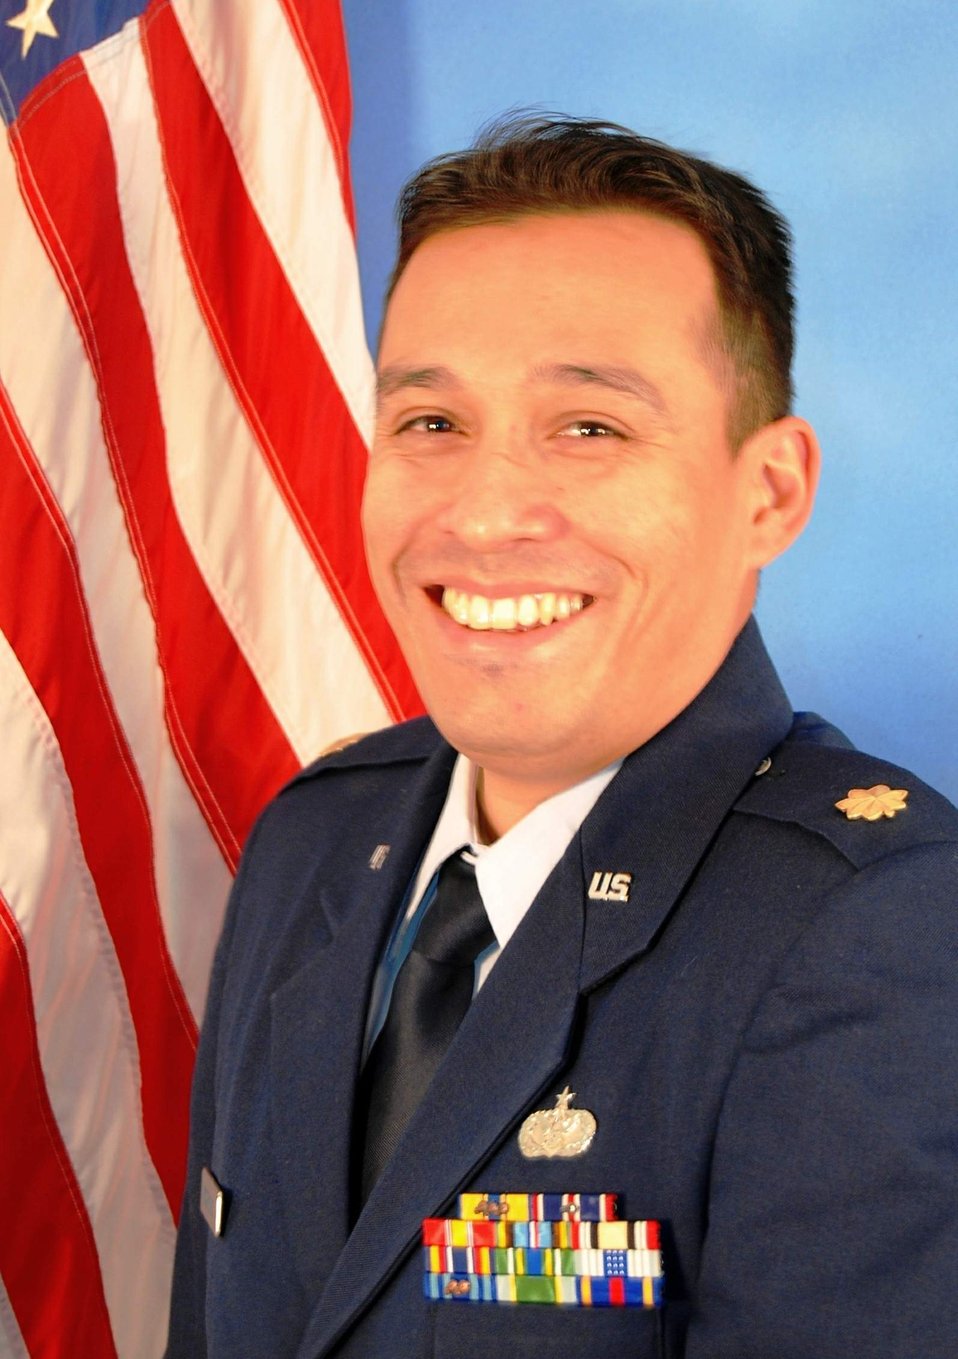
Ramstein Airman killed in Pakistan

Maj. Rodolfo Rodriguez, 34, of the 86th Construction and Training Squadron from Ramstein Air Base, Germany, was killed in a Sept. 20 explosion in Islamabad, Pakistan.